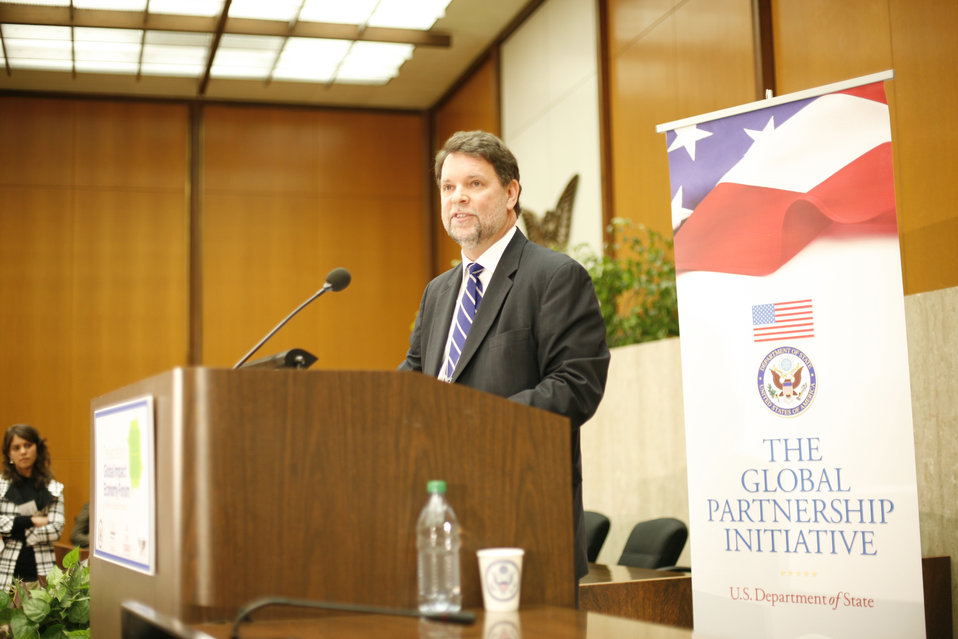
Special Representative Balderston Delivers Remarks

Special Representative for Global Partnerships Kris Balderston delivers remarks at the first-ever Global Impact Economy Forum at the U.S. Department of State in Washington, D.C., on April 26, 2012.